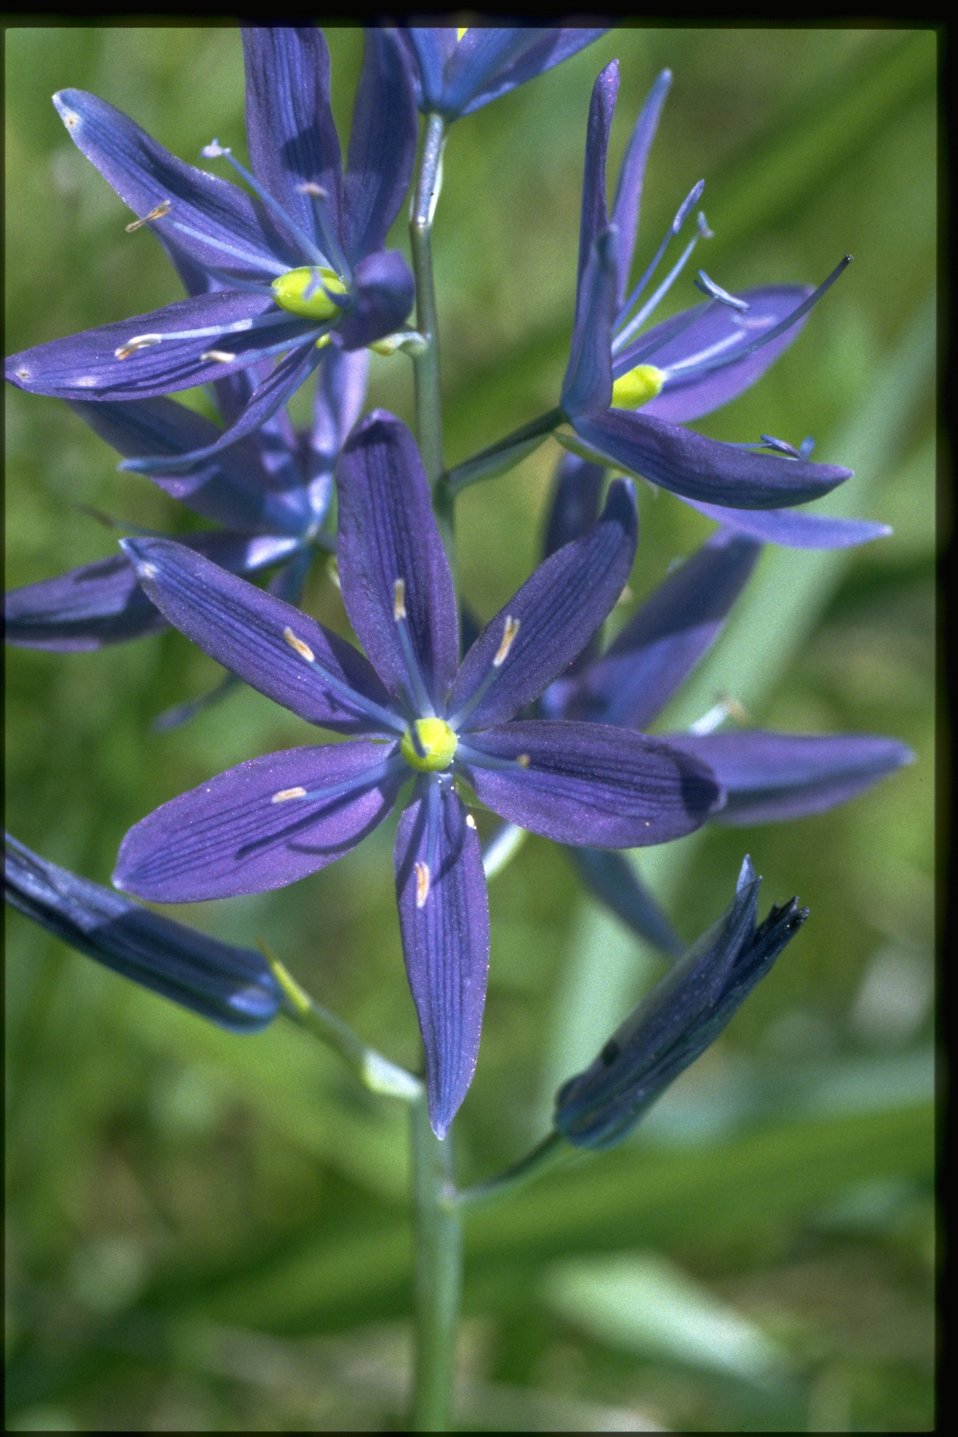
Medium shot of Camassia quamash.